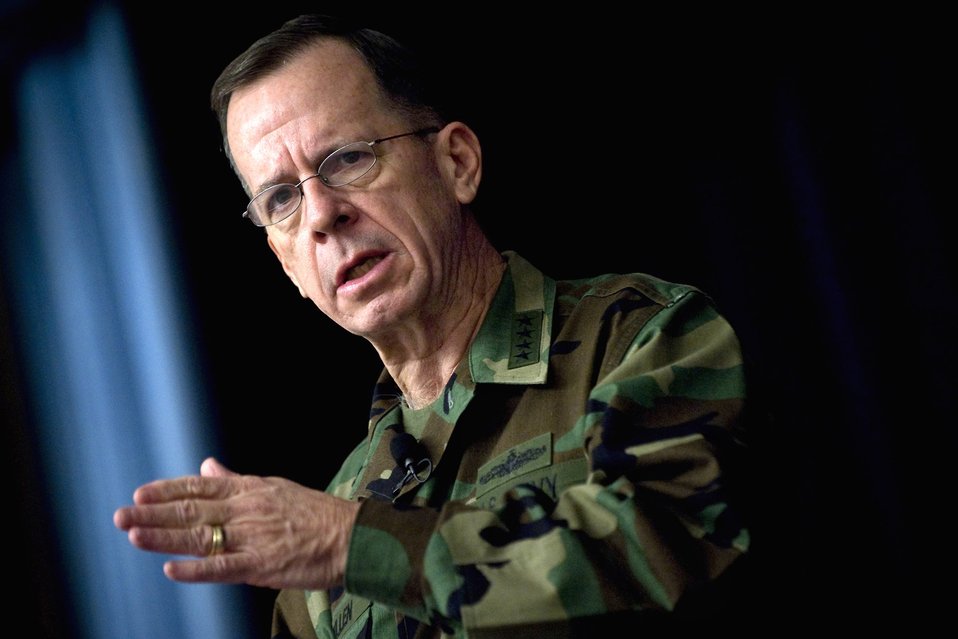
Joint Chiefs chairman highlights keys to defense

Navy Adm. Michael G. Mullen addresses students assigned to the Air War College Oct. 28 at Maxwell Air Force Base, Ala. Admiral Mullen is the chairman of the Joint Chiefs of Staff.